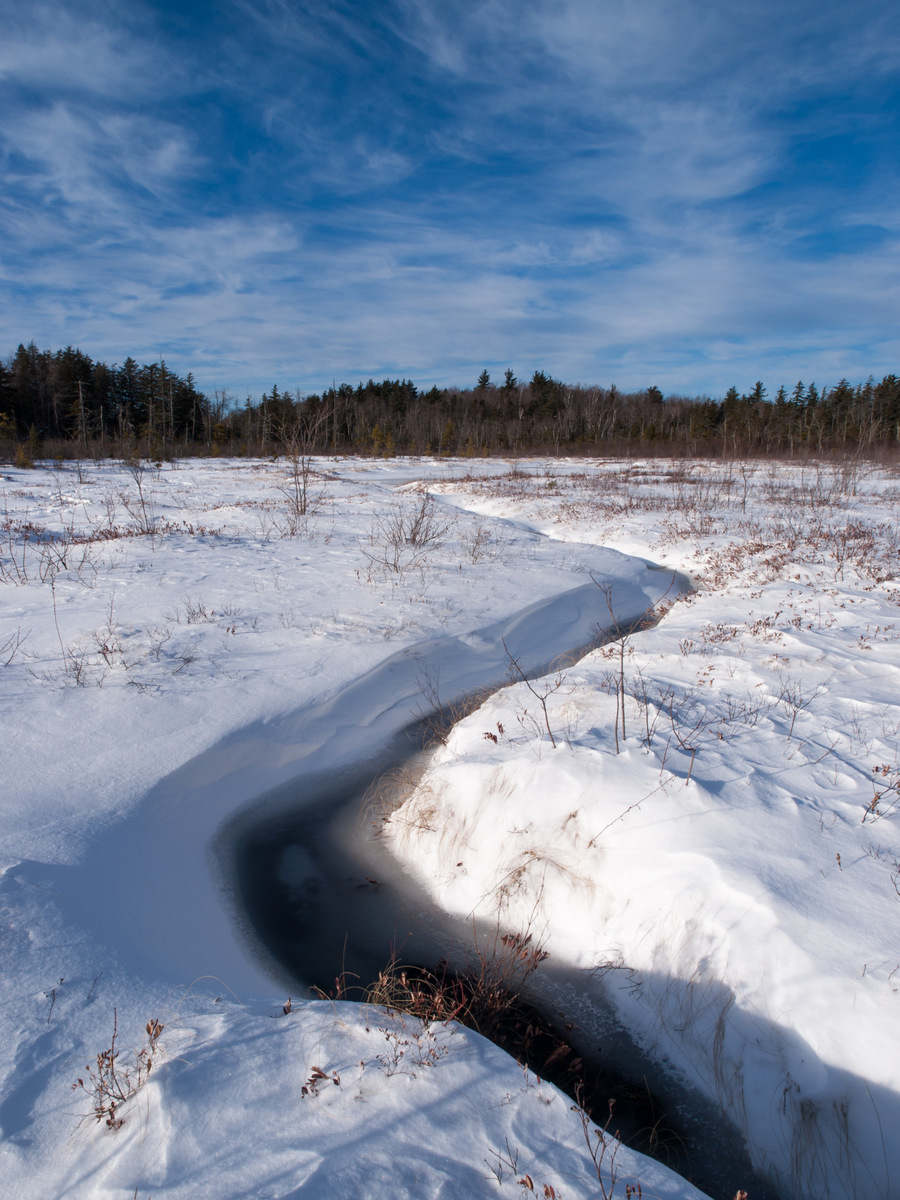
Frozen bog in Hawley, MA.